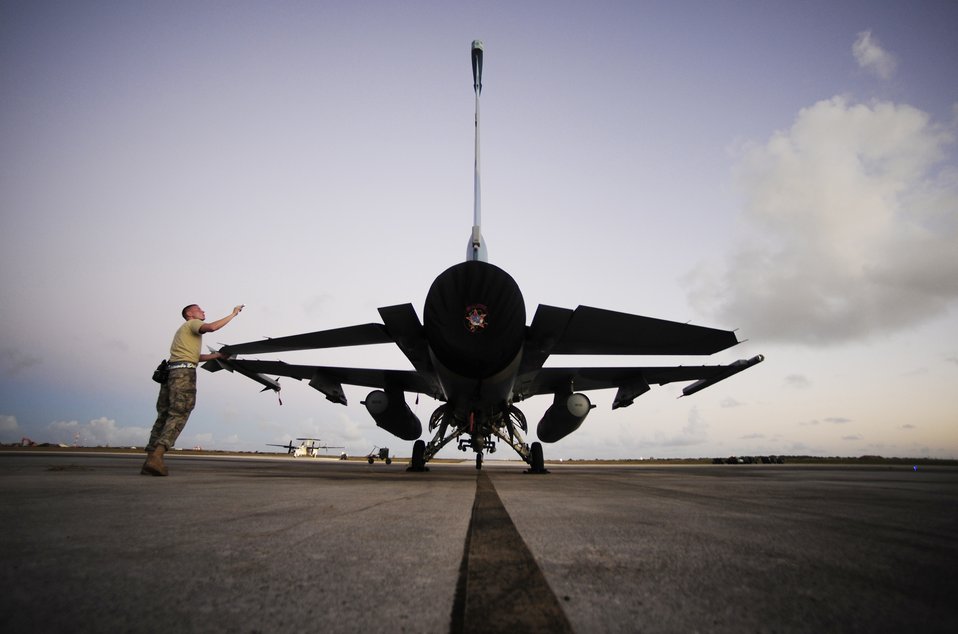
A-Okay!

Senior Airman Alexander Dolgikh checks over his F-16 Fighting Falcon during Exercise Cope North at Andersen Air Force Base, Guam, Feb. 19, 2010. The aircraft is assigned to the 18th Aggressor Squadron at Eielson AFB, Alaska. Airman Dolgikh is a crew chief with the 354th Aircraft Maintenance Squadron at Eielson AFB.